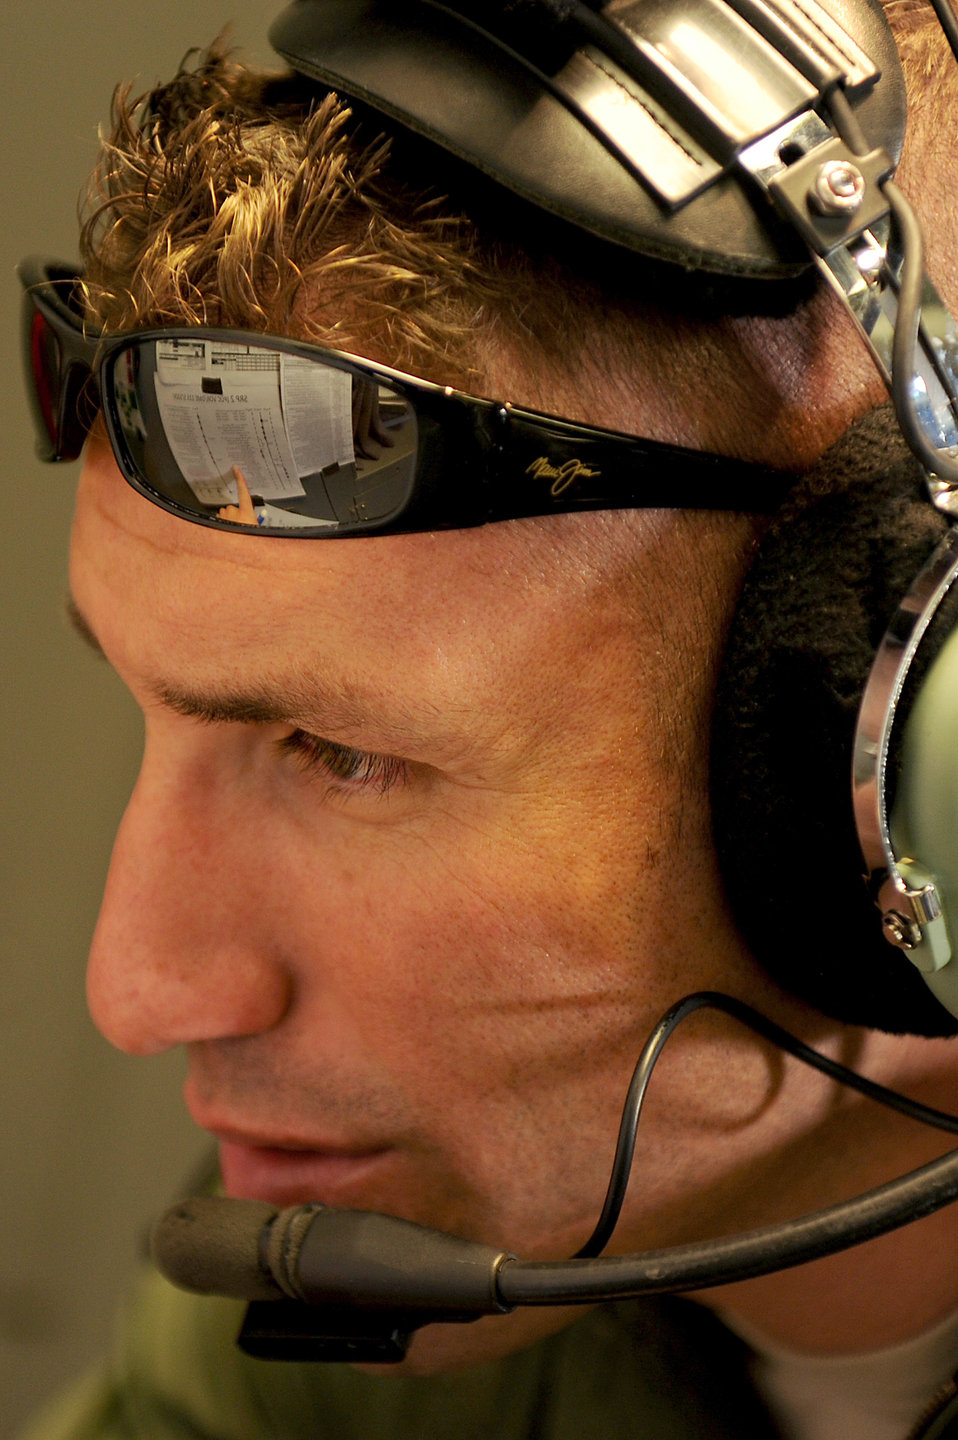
Aircrews provide training for weapons school

Capt. Dave Morales goes over the numbers during an airdrop training mission Nov. 18, 2010, at Nellis Air Force Base, Nev. The 535th AS aircrew trained in unrestricted descent assault landings, airdrop, combat offloads, air refueling, night vision goggle training, combat offloads, low levels, mountainous terrain, assault landings, threat responses and multiple ship formation training during a five-day training trip to Washington Nov 12-17 leading up to the MAFEX. Captain Morales is 535th Airlift Squadron C-17 Globemaster III pilot.